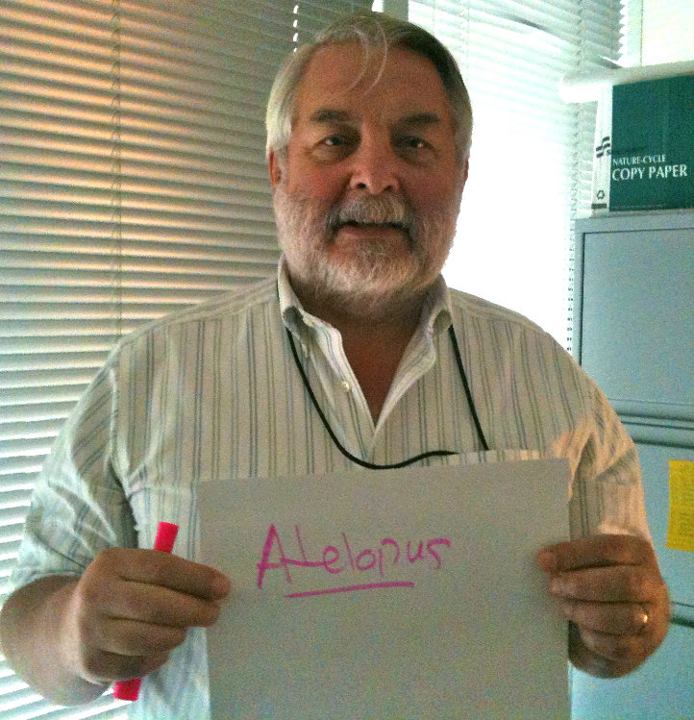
Jeff Jorgensen, 'Atelopus,'

International Affairs participates in FFI's In Our Hands campaign